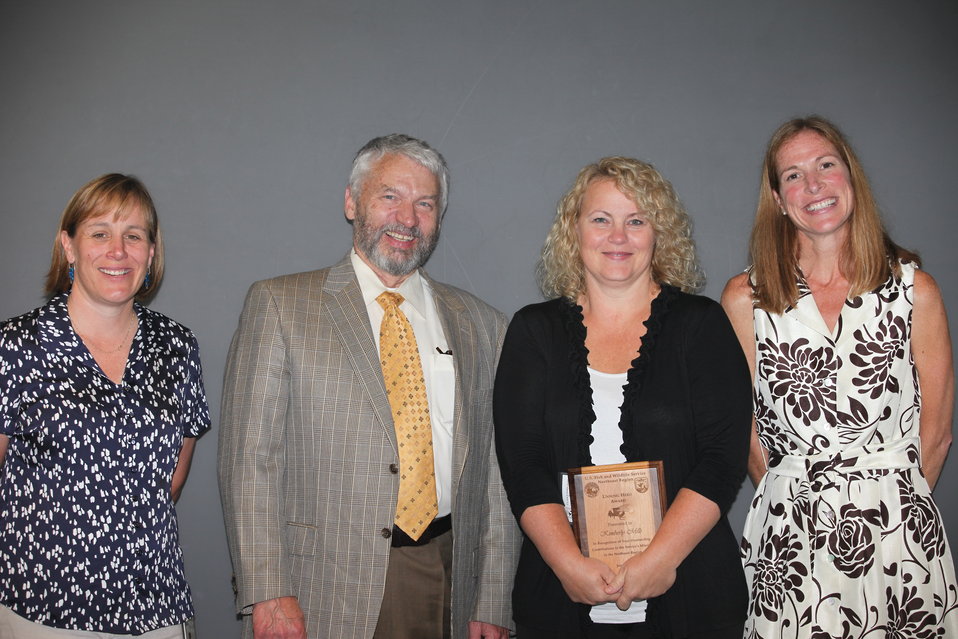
Kimberly Mills, Information Technology Management recieved a Region 5 Unsung Hero Award.
From left to right: Deputy Regional Director Deb Rocque, Deputy Director Rowan Gould, Kimberly Mills, and Regional Director Wendi Weber